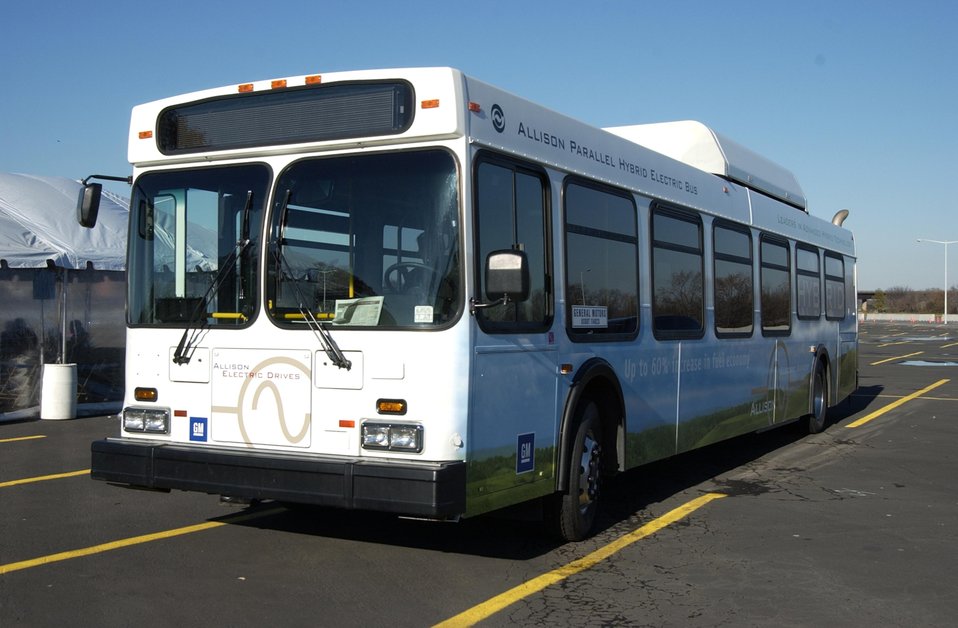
GM HYBRID ELECTRIC BUS.

THE GM HYBRID ELECTRIC BUS IS POWERED BY A CLEAN HYBRID TECHNOLOGY FROM ALLISON TRANSMISSION, A UNIT OF GM. THE SYSTEM PRODUCES MUCH LOWER HYDROCARBON AND CARBON MONOXIDE EMISSIONS THAN THE NORMAL DIESEL BUSES.